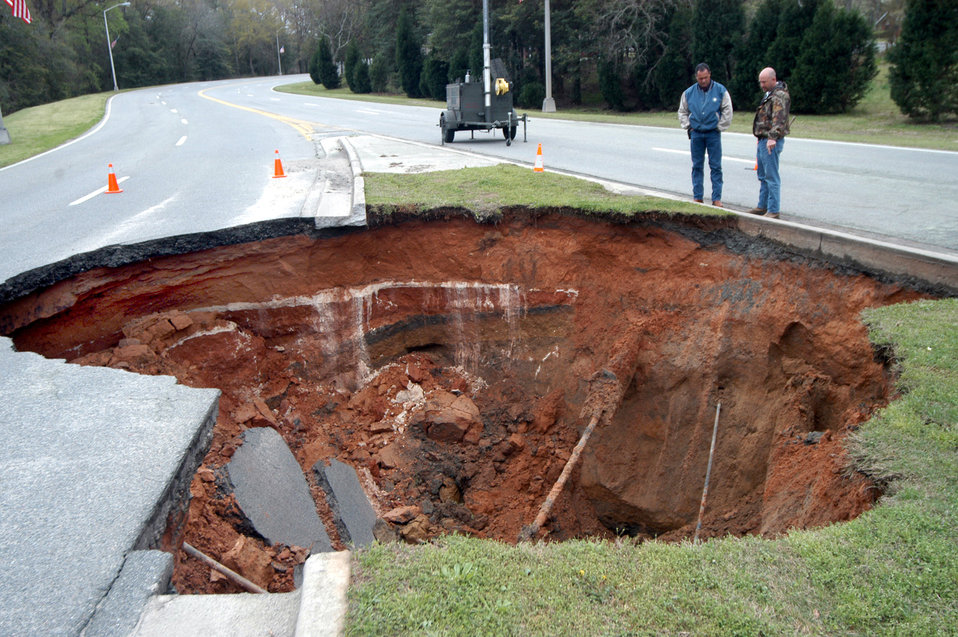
I've got a sinking feeling

ROBINS AIR FORCE BASE, Ga. -- Workers examine a 30-foot-wide, 15-foot-deep sinkhole that damaged a section of a busy road here. Base officials expect the road to be open by April 7 with only minor work left to be completed on the road's shoulder.